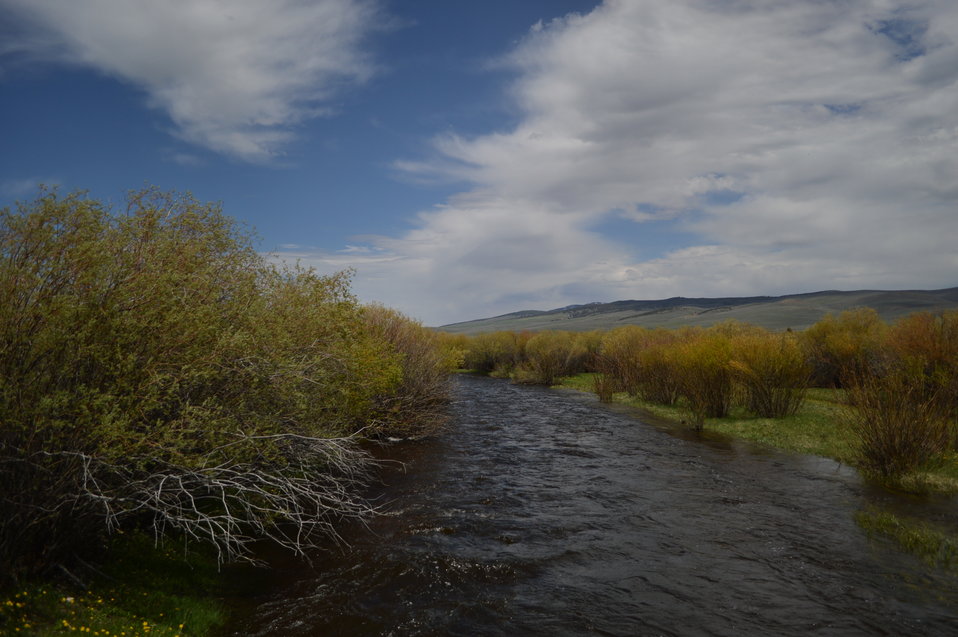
Regional Leadership Visit to Montana 2014